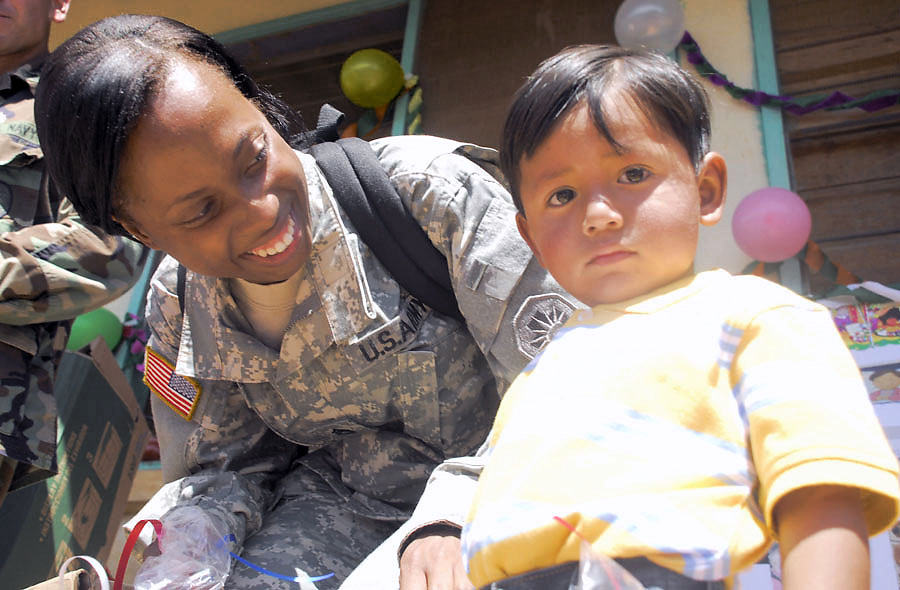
JTF Bravo participates in Honduras Children's Day

Army Staff Sgt. Jenise Harris spends time with child during Children's Day Sept. 10 in Guajiquiro, Honduras. More than 400 children in two towns spent time with servicemembers from Joint Task Force-Bravo. Sergeant Harris is assigned to JTF-Bravo Civil Affairs.